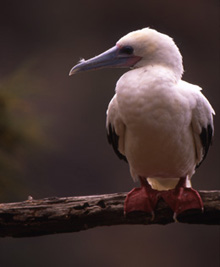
Red Footed Booby - Kilauea Point NWR

The smallest of all Booby birds, the Red-Footed Booby can be seen year-round on Kilauea Point.